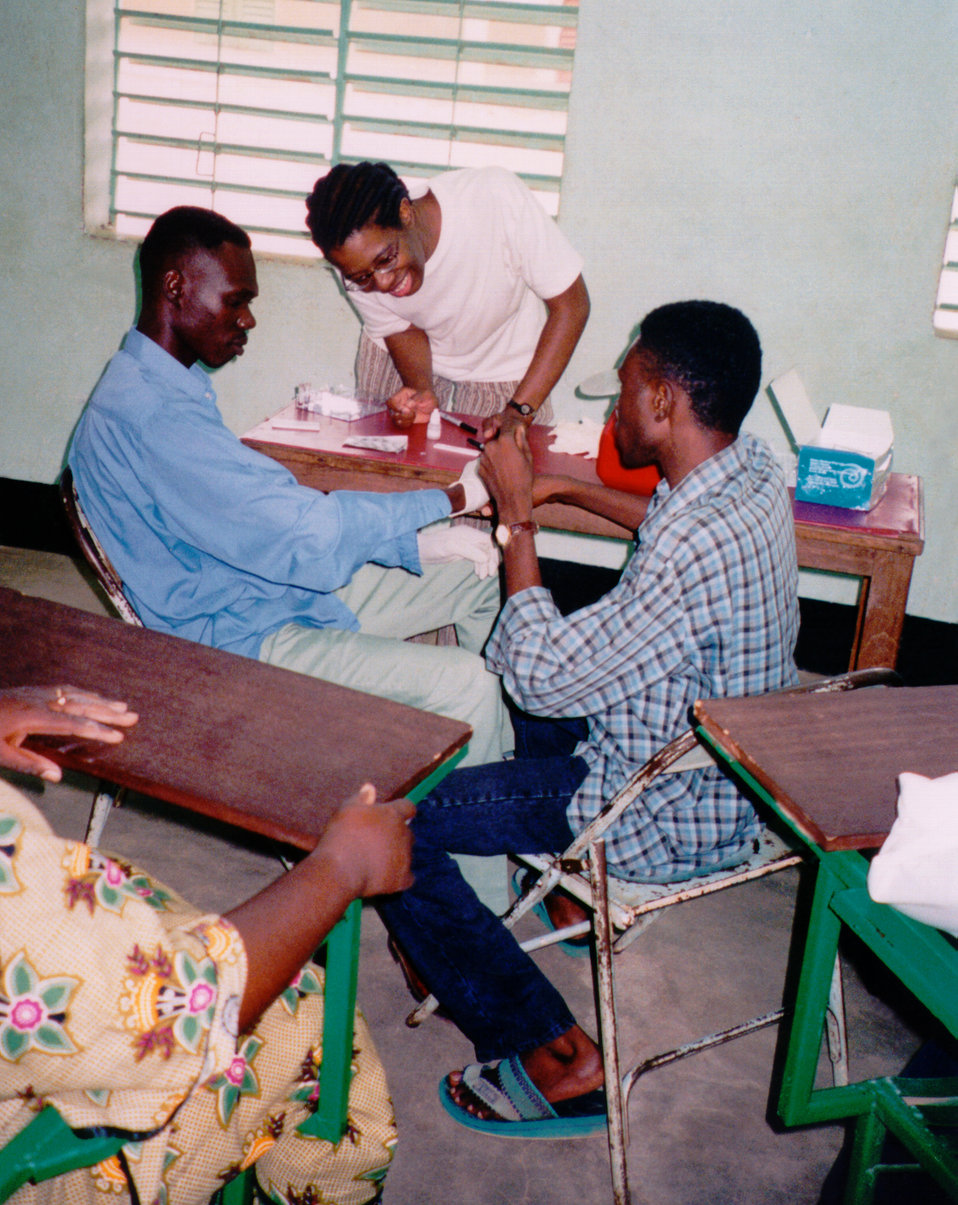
This was Gail Stennies, M.D. (standing Cntr) in Koupela, Burkina Faso in western Africa.